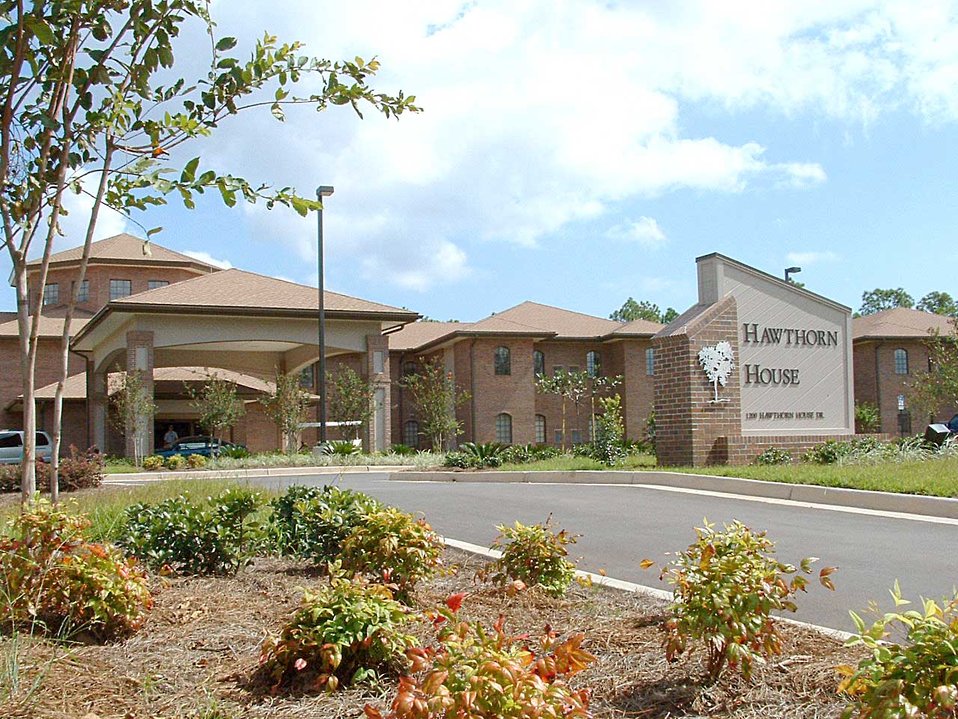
Enlisted Village opens assisted living doors

SHALIMAR, Fla. -- The Air Force Enlisted Village recently opened the doors to Hawthorn House, the latest addition to the community that